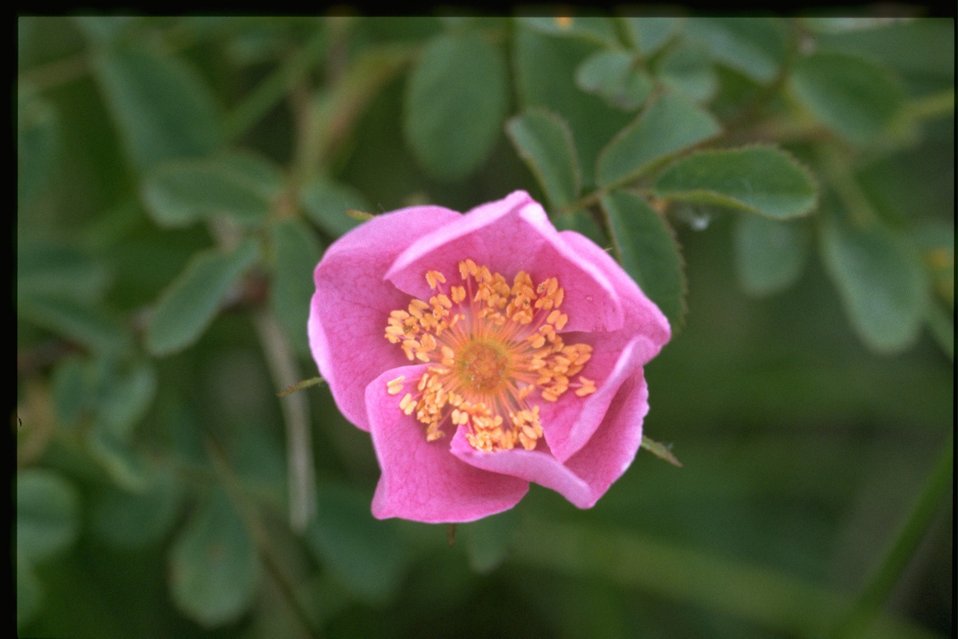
Medium shot of Rosa nutkana.